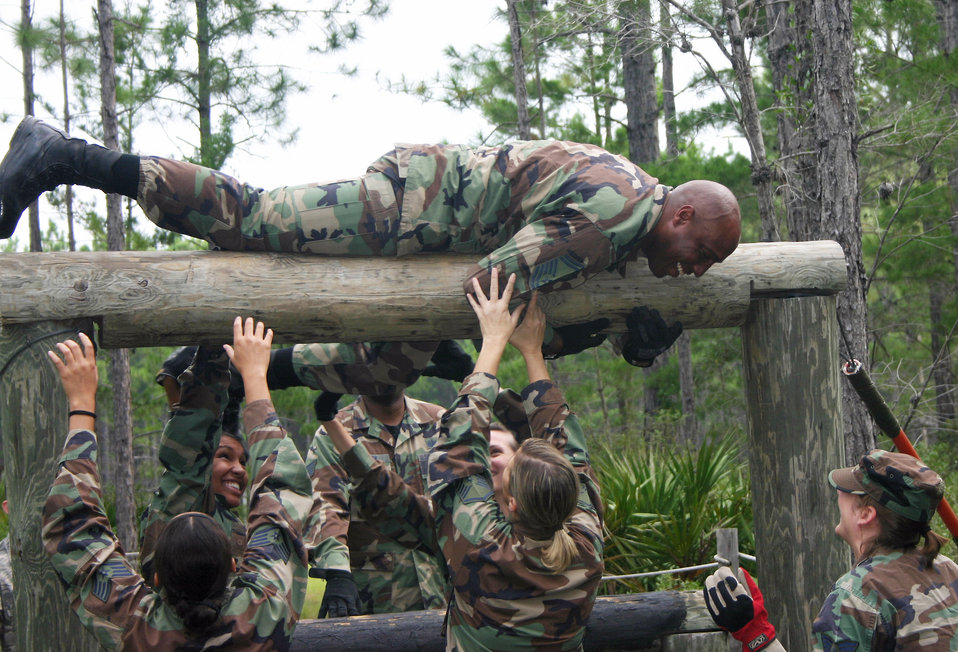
Airmen hone contingency skills at Silver Flag

Senior Master Sgt. Nate Tennyson tackles the 823rd Red Horse Squadron's obstacle course during a Silver Flag exercise at Tyndall Air Force Base, Fla. Silver Flag provides contingency training where Airmen from various career fields can train and interact in a realistic environment.